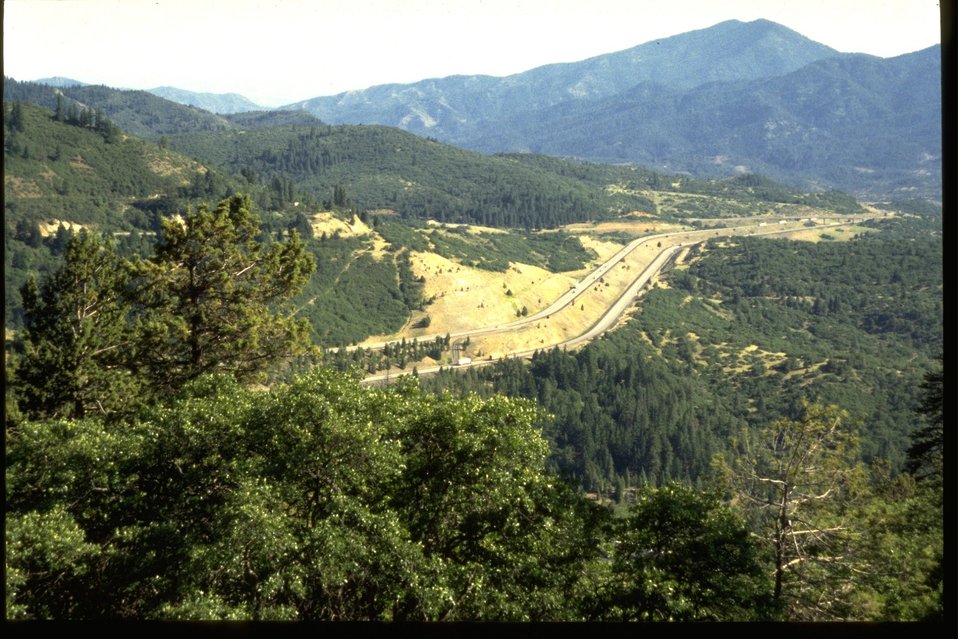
Interstate 5.